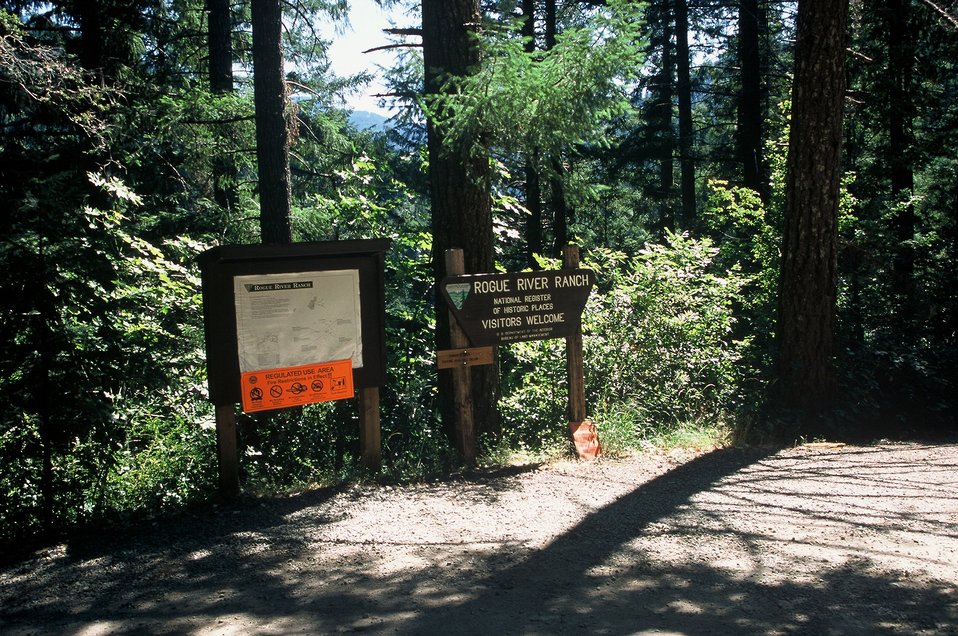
Signage to Rogue River Ranch